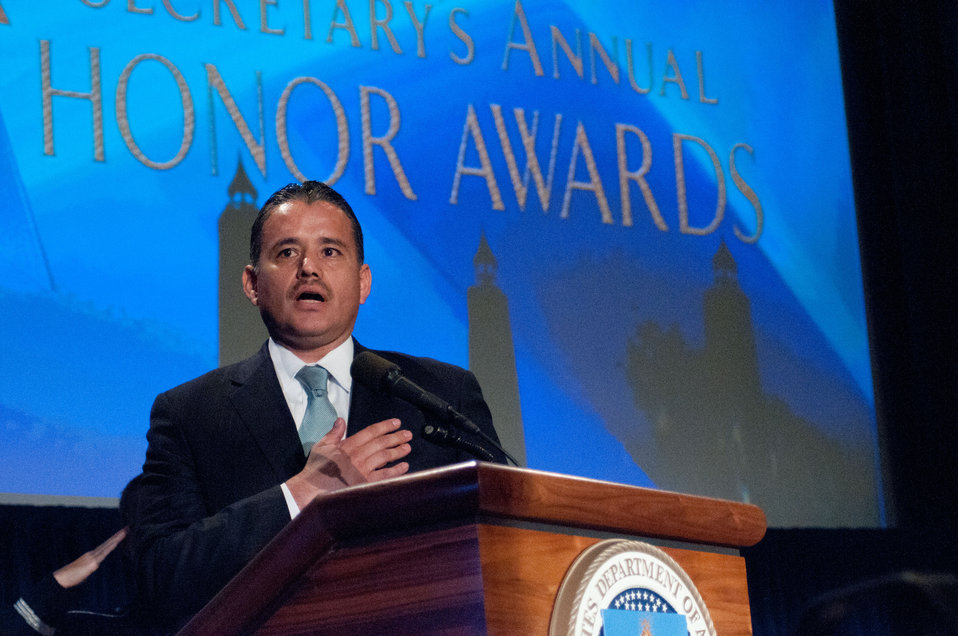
Deputy Assistant Secretary for Administration Oscar Gonzales led the Pledge of Allegiance for the United States Department of Agriculture 63rd Secretary’s Annual Honor Awards ceremony held in the Jefferson Auditorium in Washington, D.C. on Wednesday, September 14, 2011.